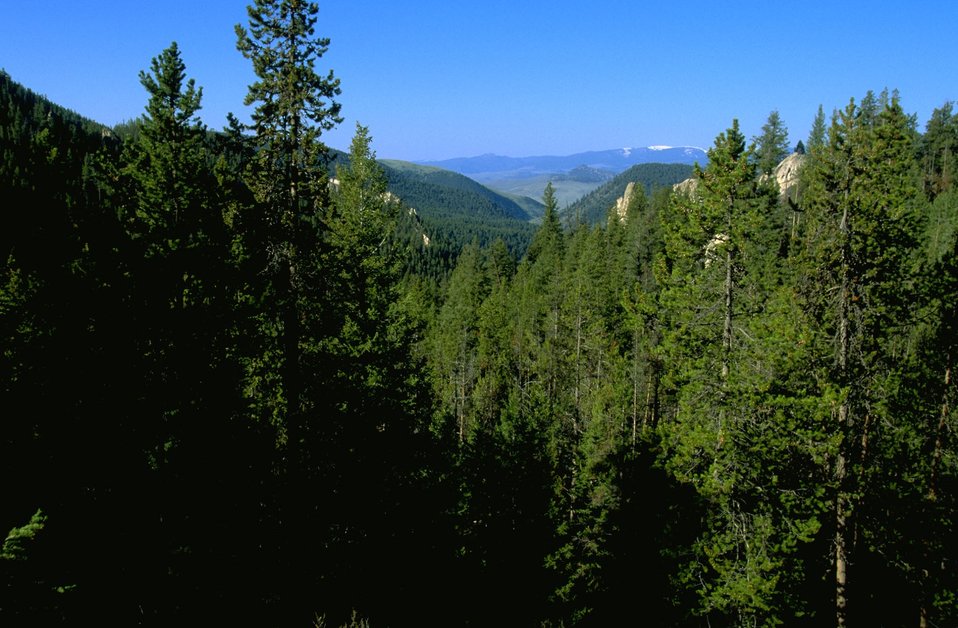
View from trail of trees in the Humbug Spires Wilderness Study Area